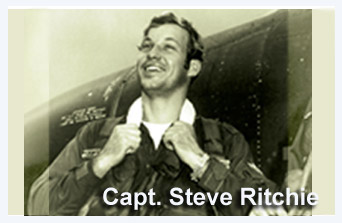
Capt. Steve Ritchie is pictured beside his aircraft in South Vietnam in 1972, following the mission where he became the first ace in the Vietnam War.